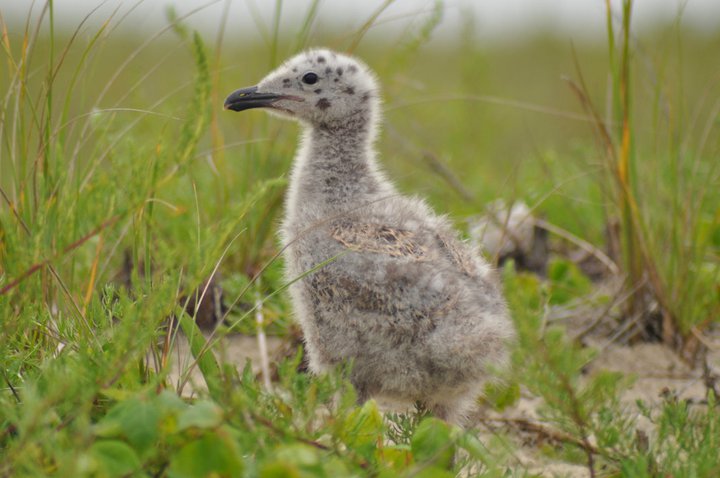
Great Black-Backed Gull Chick

A great black-backed gull chick at the Nantucket National Wildlife Refuge, MA.